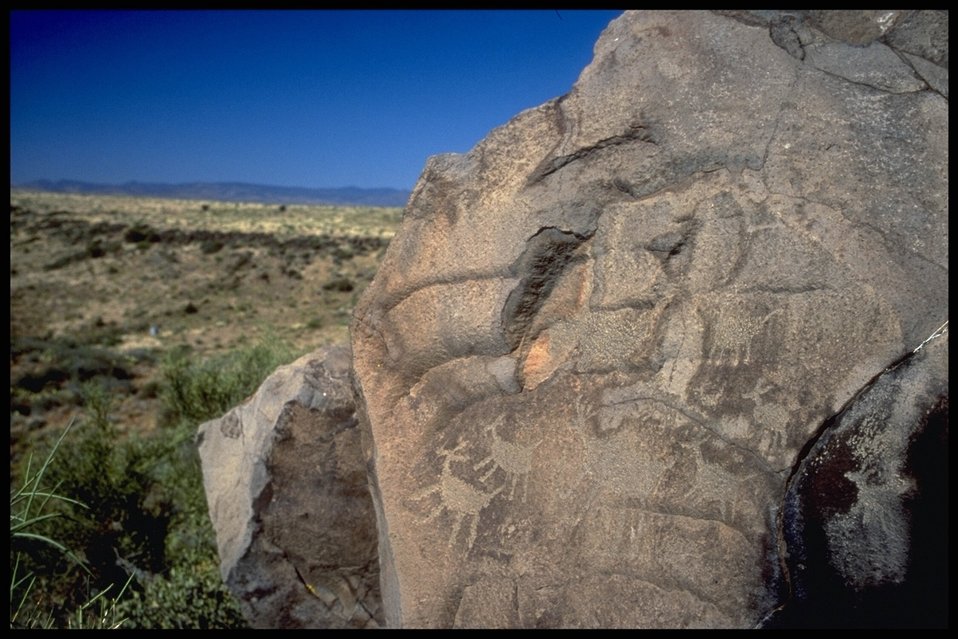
A Petroglyph (Rock Art) is shown with the blue Arizona sky hanging over the 71,000 acre Agua Fria National Monument in the Background.